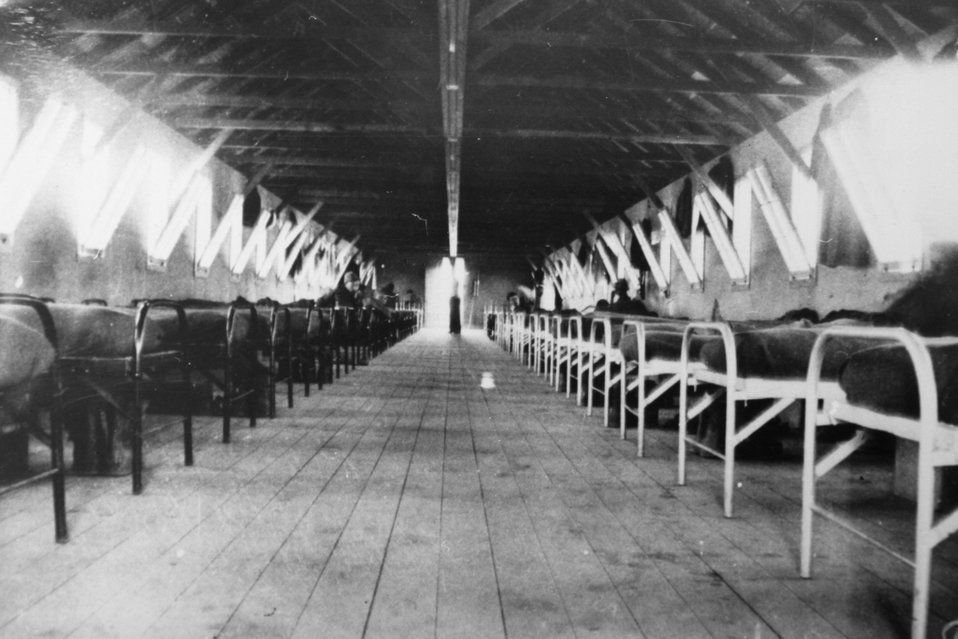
Interior of barrachs at Gap Ranch CCC Camp. Circa 1940. Each barrachs slept 50 men.